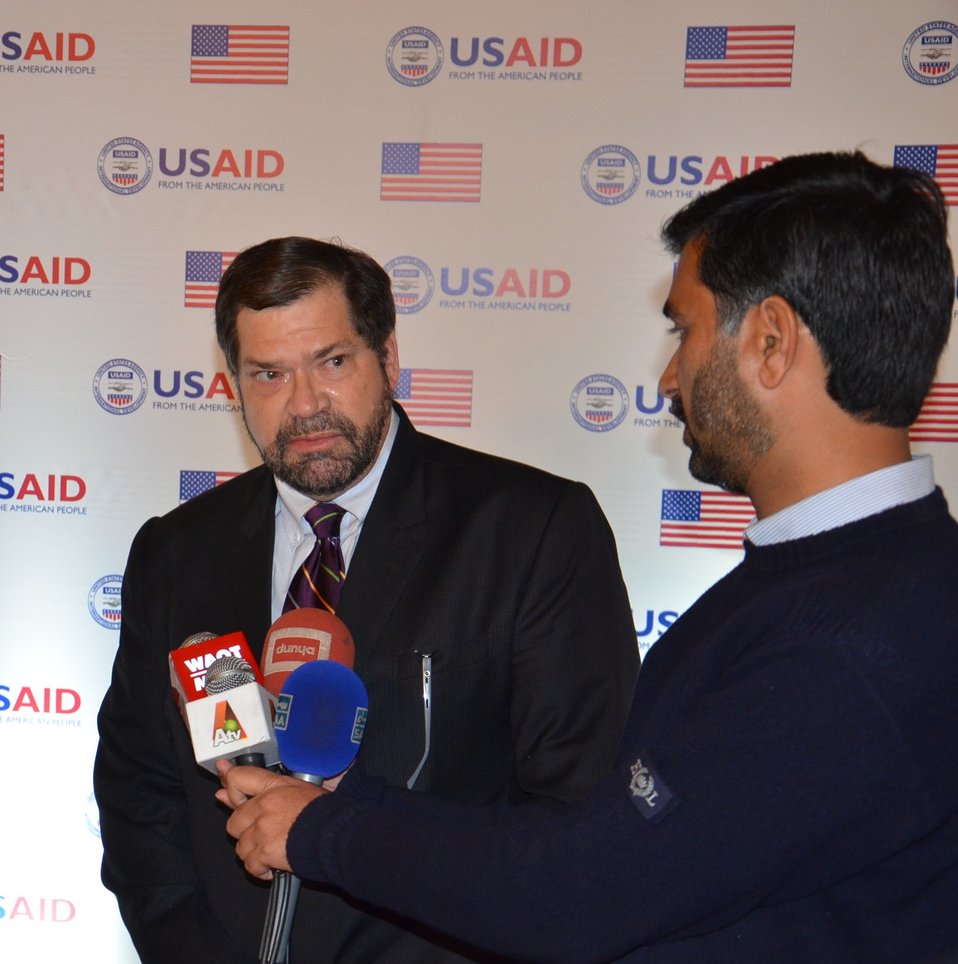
Mr. Bakken during media interviews